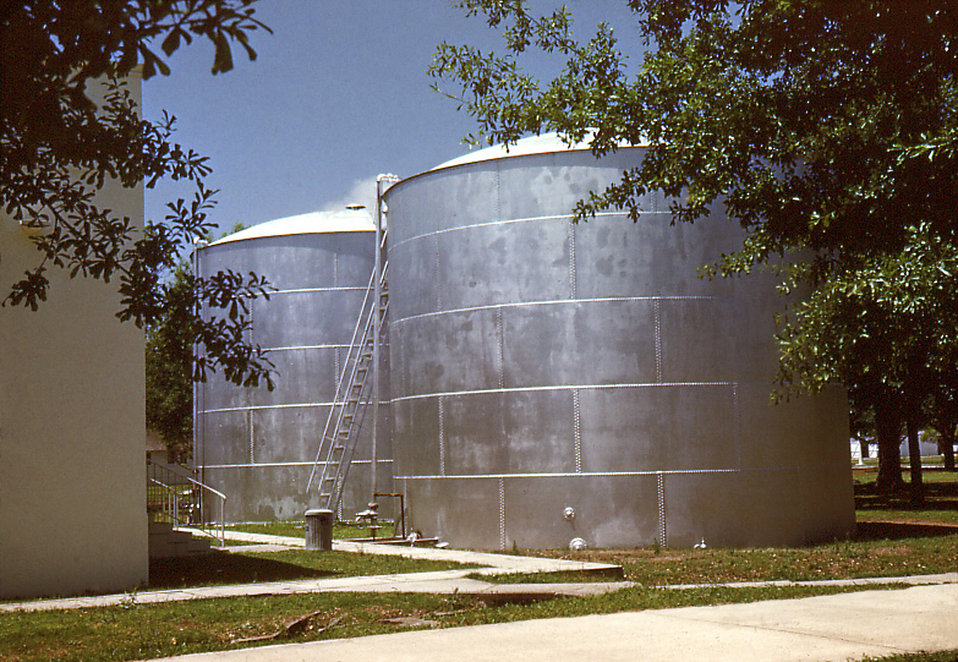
This historic image depicted two large tanks located on the grounds of the Carville, Louisiana Leprosarium, for the purpose of storing the institution's fuel oil. The facility's infirmary and dormitory were heated with steam, as well as hot water, all powered by fuel oil, which came from these fuel storage tanks. The hospital was a self-contained compound with its own storehouse, laundry, food-processing facilities, and patient treatment center."Patients of the U.S. Marine Hospital in Carville, Louisiana, produced a set of 35 mm slides around 1950 from which this image was derived. In 2002, a patient's son donated the set, the only one known in existence, to the museum. The father, a patient at Carville for several years, brought these slides home around 1950 to give his family a snapshot of life at the national leprosarium. The act of quarantining patients for leprosy (HD) remained law in the state of Louisiana until 1957."